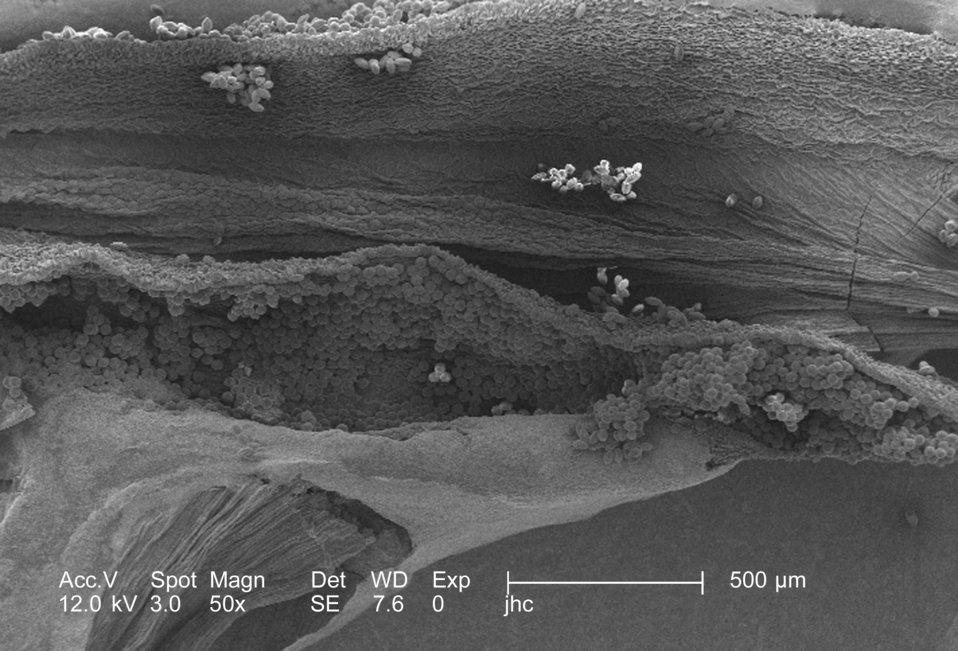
Under a very low magnification of 50x, this scanning electron micrograph (SEM) revealed some of the morphologic ultrastructure found amongst a collection of pollen found within the dehisced, or split open, anther of a yellow "Fireworks" sundrops, Oenothera fruticosa flower. Note the pod-like configuration of the anther, within which reside many pollen grains ready for dissemination into the passing wind, or to become attached to a pollinator such as a bee. Judging by the shape of these pollen grains, it appears that the majority had yet to dry, for the elliptical, "football"-shaped grain, closer to the lip of the anther, represented those that had dried, and the round grains represented those that were still moist.